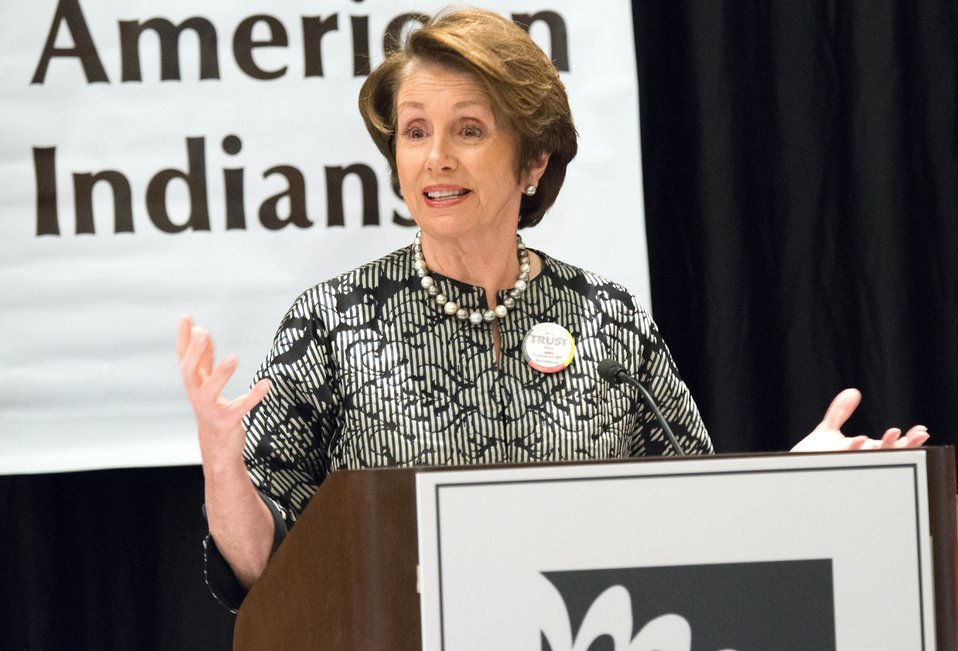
Congresswoman (CA) Nancy Pelosi addresses the 2014 National Congress of American Indians (NCAI) Executive Council Winter Session at the Westin Washington City Center in Washington, D.C. on Thursday, Mar. 13, 2014.